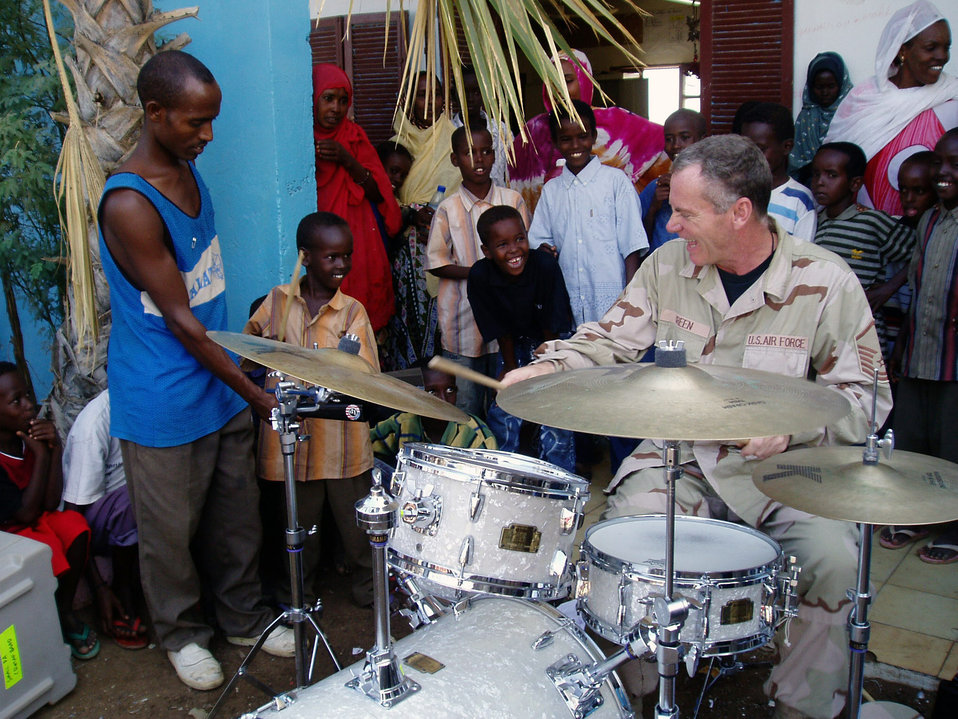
Air Force bands 'in the fight'

Master Sgt. Robert Green performs a drum solo with the help of a Douda School boy Dec. 11 in Djibouti. Sergeant Green is a percussionist with the Air Force Band of Flight Wright Brass Quintet and the Band of Flight. The Band of Flight is located at Wright-Patterson Air Force Base, Ohio.